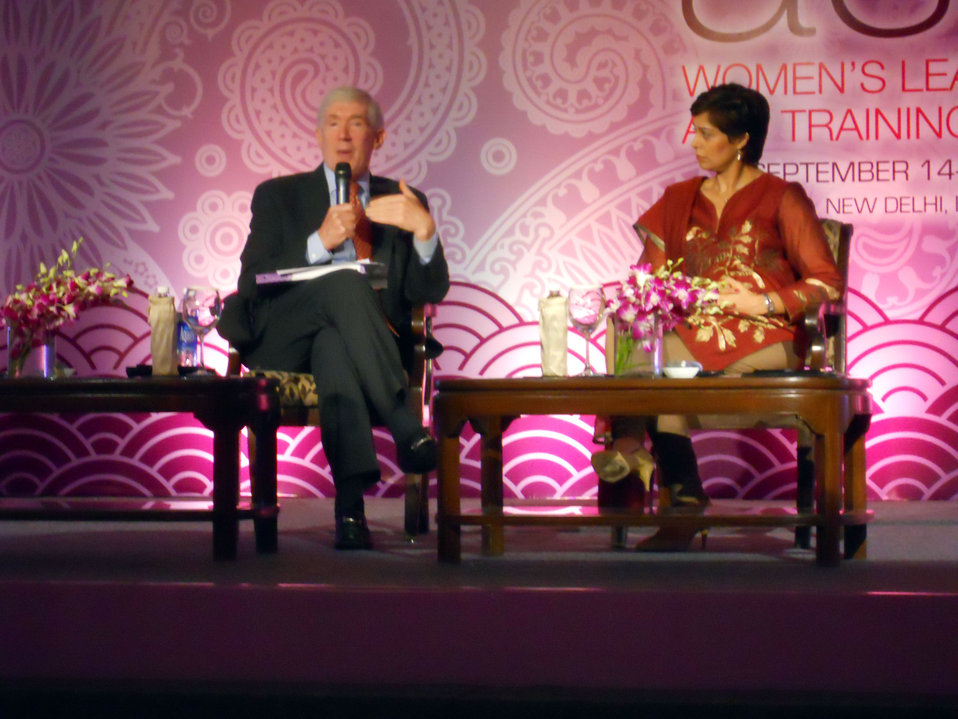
Under Secretary Hormats Responds to Question Posed By CNN International's Verjee

U.S. Under Secretary for Economic, Energy and Agricultural Affairs Robert D. Hormats responds to a question posed by CNN International's Zain Verjee at the Vital Voices Women's Empowerment Summit in New Delhi, India, on September 15, 2010.